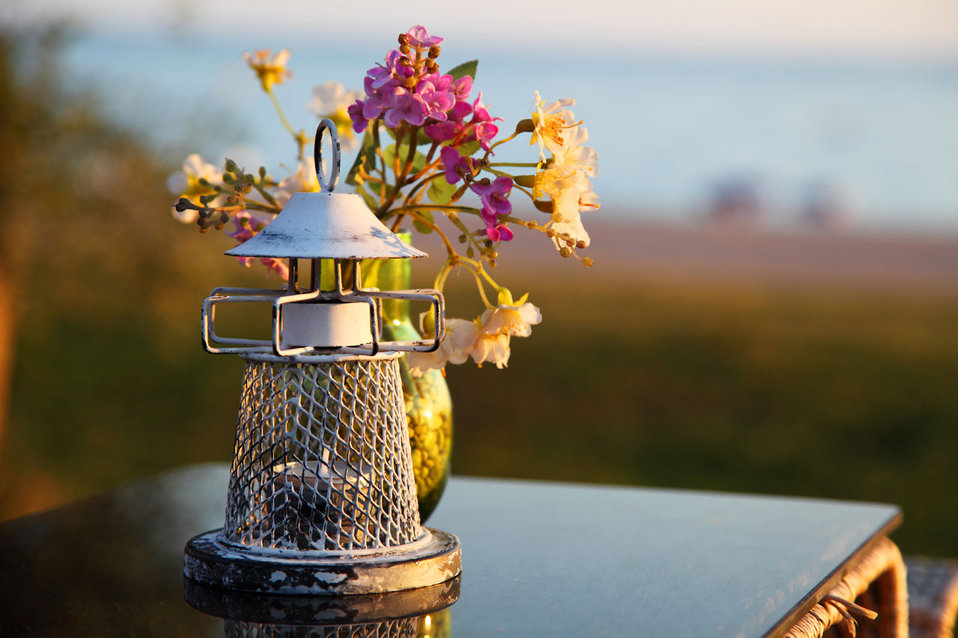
Candle holder and flowers on restaurant table with ocean view.